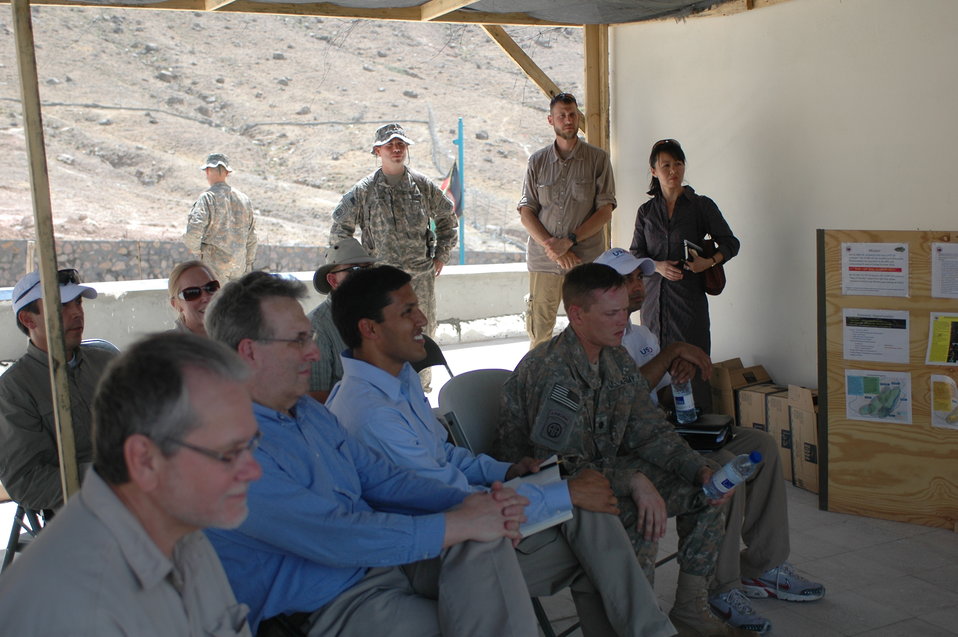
Dr Shah Visits Kandahar April 9, 2010